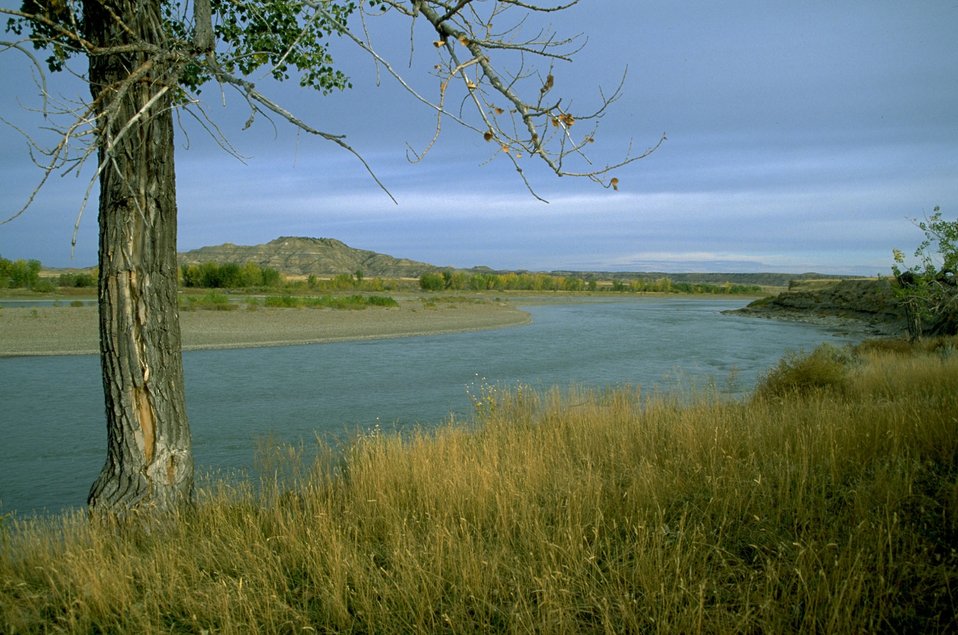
Sheridan Butte - Terry Badlands Wilderness Study Area